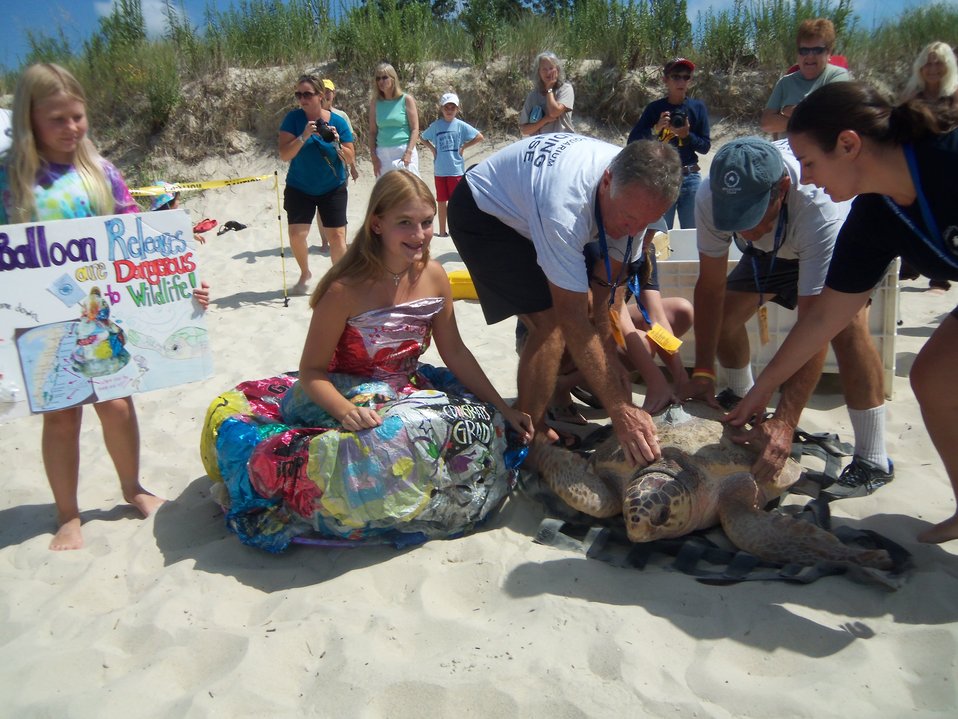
Balloon dress

Jessica Flory, center, in balloon dress, and younger sister Hailey, left, watch members of the Virginia Aquarium Stranding Response Team release a turtle at Cape Charles Beach.